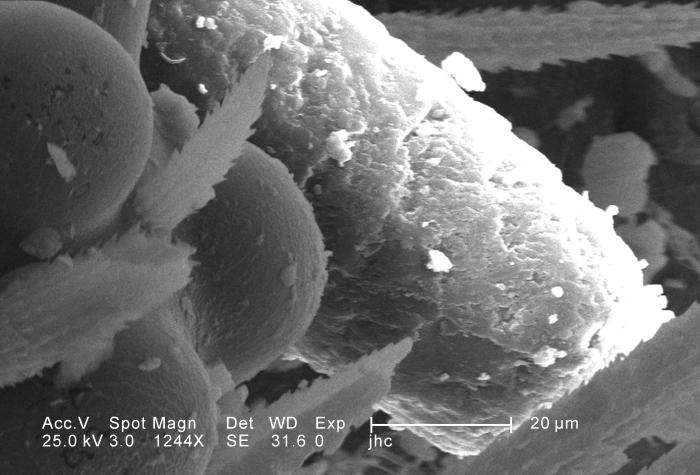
Under a magnification of 1244X, this scanning electron micrograph (SEM) depicted some of the ultrastructural morphology displayed on the head region of a larval antlion, surrounding the region of its right compound eye. This larva is sometimes referred to as a 'doodlebug', because of the trails it leaves in the soft sand as it hunts for prey. This arthropod, i.e., jointed legs, undergoes dramatic morphologic changes when it metamorphoses into a beautiful flying antlion lacewing. Note the particulate debris dispersed over the exoskeletal surface, which represents sand, and other constituents of the antlion's natural environment. See PHIL 11812 through 11817 for additional views of the eye under successively greater madnifications.